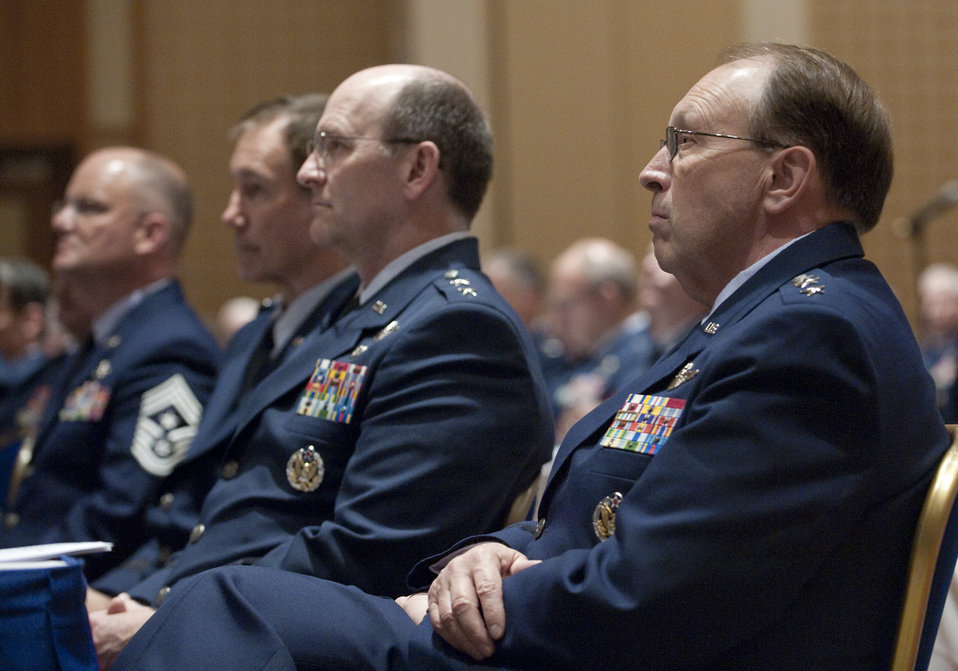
Air Force Reserve Command Senior Leader Conference

From right to left: Chief of the Air Force Reserve and Air Force Reserve Command Commander Lt. Gen. Charles Stenner, Deputy to the Chief of the Air Force Reserve Maj. Gen. James Jackson, Air Force Reserve Command Vice Commander Maj. Gen. Craig Gourley, and Air Force Reserve Command Command Chief Master Sgt. Dwight Badgett listen as Secretary of the Air Force Michael Donley addresses senior leaders of the Air Force Reserve Command on May 16, 2011, during their annual conference in Washington, D.C.